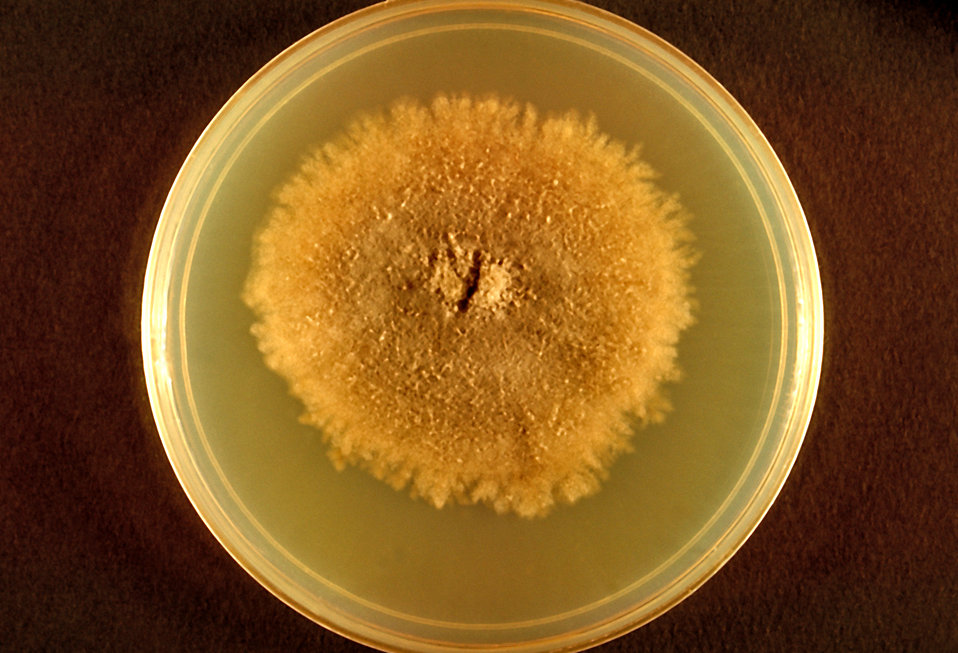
This image depicts a plate culture containing a fungal colony of Pyrenochaeta romeroi.